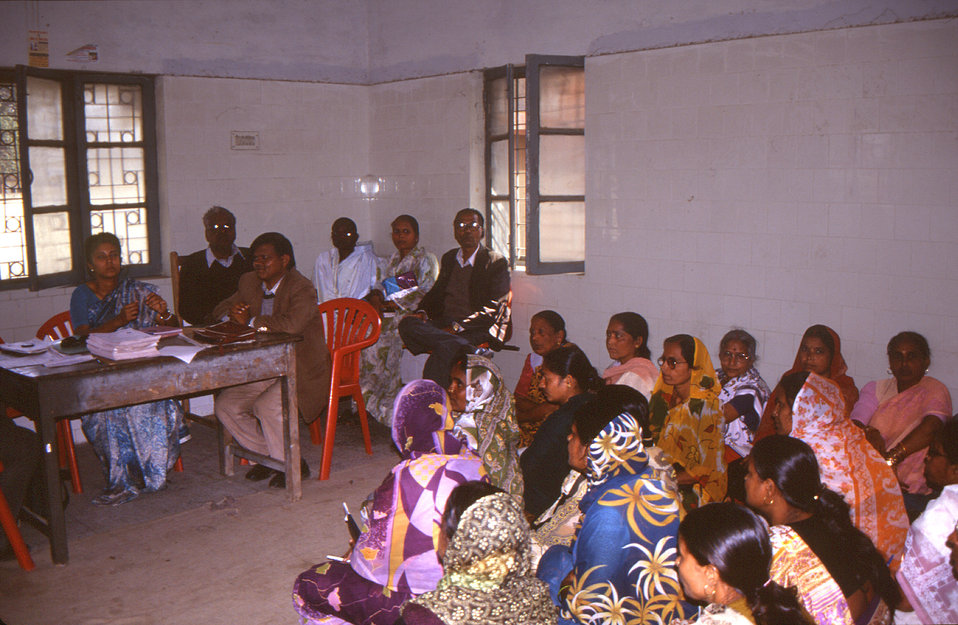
Depicted in this 2000 photograph were Indian health care workers in the country's Deoria District, as they were receiving training about the protocols associated with the STOP Transmission of Polio (STOP) immunization initiative. Since the program's inception in the fall of 1998, the STOP Teams have worked in over 50 countries. In the first years of the program, most STOP team members worked primarily to bolster acute flaccid paralysis (AFP) surveillance, support 'national immunization' days, and conduct polio case investigation and follow-up. STOP team members are recruited and trained primarily by CDC, however, once on assignment, they are under the supervision of either WHO or UNICEF.